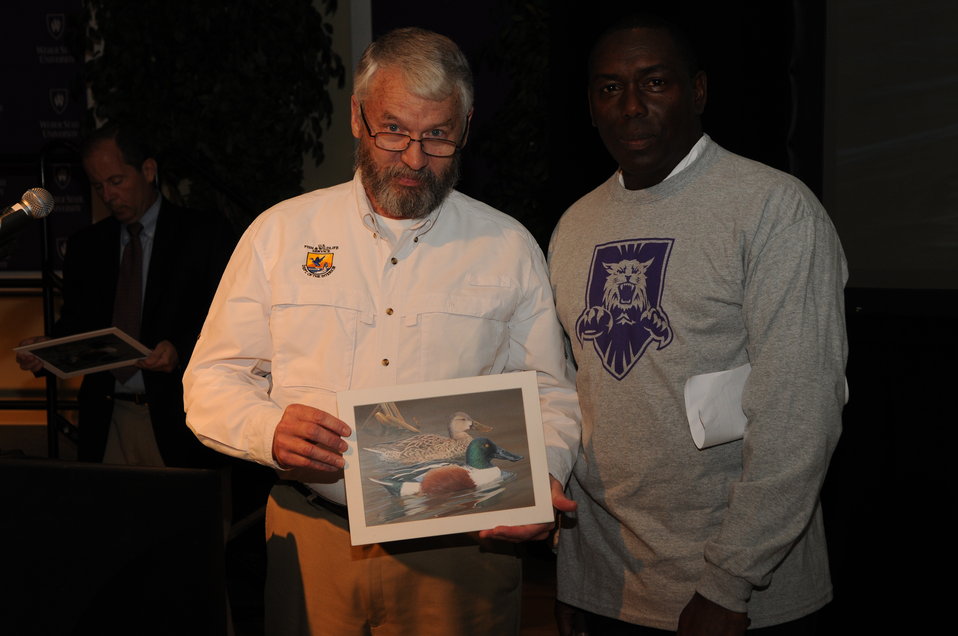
Everyone Loves a Winner

The U.S. Fish & Wildlife Service sponsored the 2012 Federal Duck Stamp Art Contest September 28 and 29 in Ogden, Utah, at Weber State University. A panel of five judges was responsible for choosing the art work used to design the 2013-2014 Migratory Bird Hunting and Conservation Stamp.